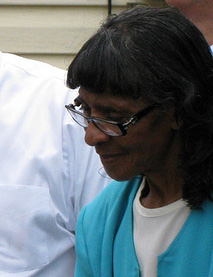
Angeline Westbrook